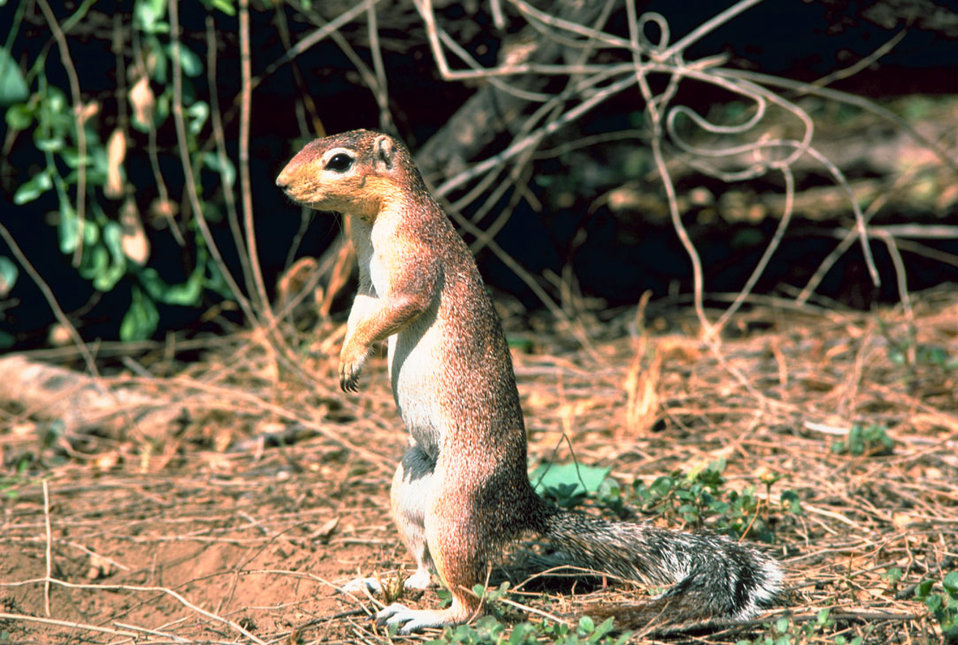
African ground squirrel.